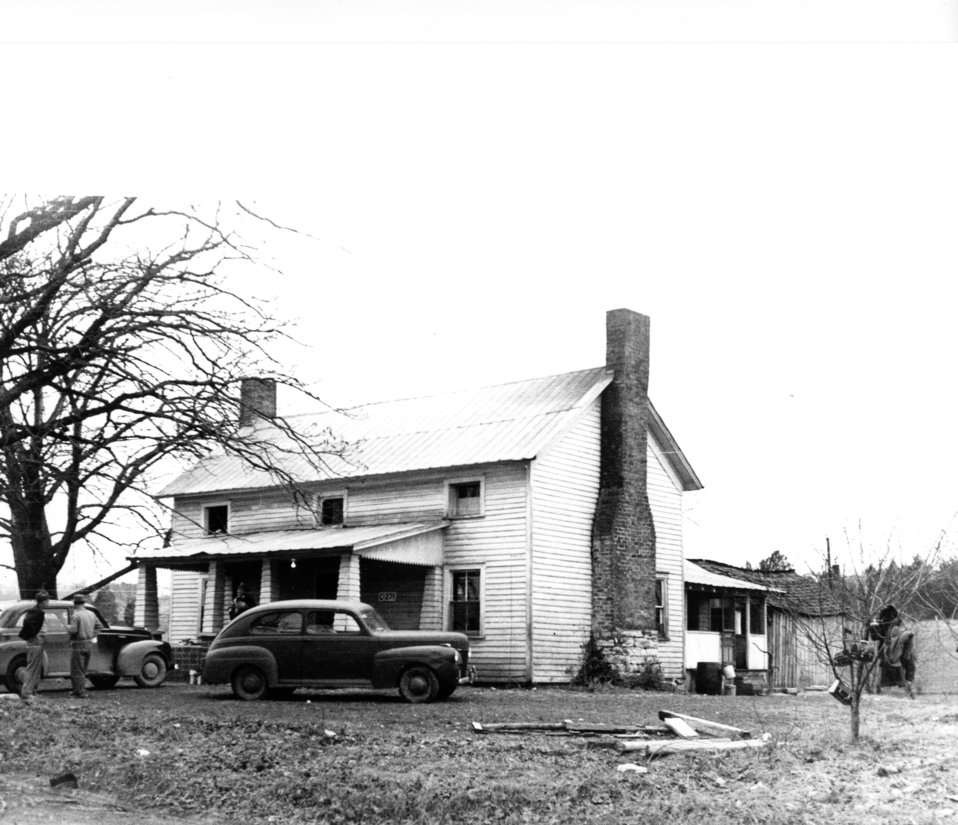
Early settlers at Oak Ridge